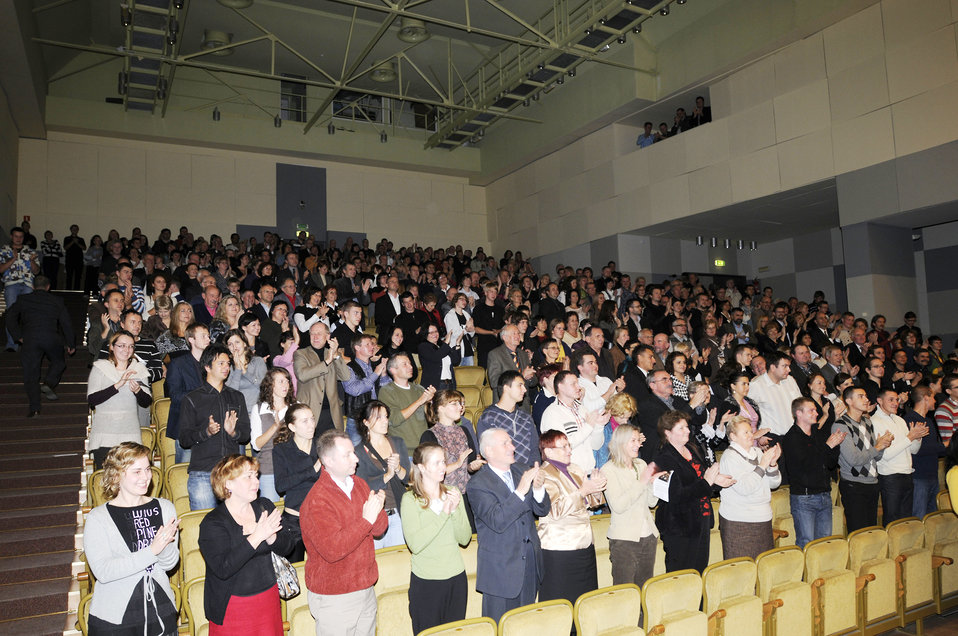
USAFE Band tours Poland

An appreciative audience gives a standing ovation to the U.S. Air Forces in Europe Band after their performance Oct. 20, 2009, in Wroclaw, Poland. The 41-piece band performed a two-hour concert as part of a six-concert series in Poland.